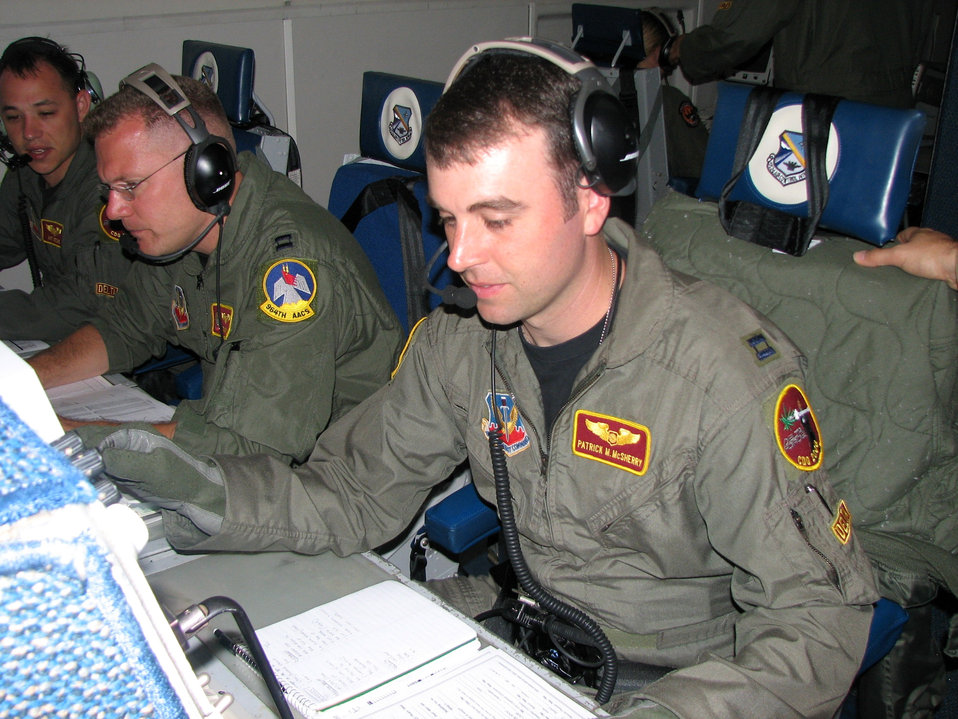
AWACS: A team effort

From left, Captains Matt Ketchie, Tim Higgins and Patrick McSherry work during an E-3 Sentry mission Dec. 21 over Ecuador. The three are deployed to Manta Forward Operating Location, Ecuador, from Tinker Air Force Base, Okla. Captain Ketchie and McSherry are air weapons officers, and Captain Higgins is a senior director. The Airmen coordinate with agencies to provide better imagery.